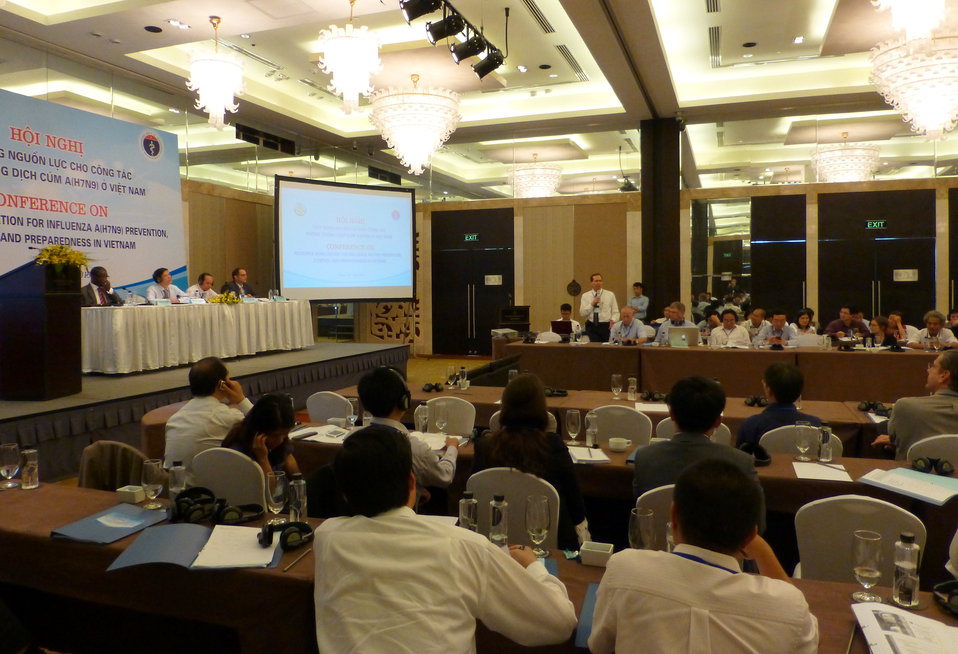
Conference on Resource Mobilization for Influenza A (H7N9) Prevention, Control and Preparedness in Vietnam

Hanoi, May 6, 2013
Supported by USAID Vietnam